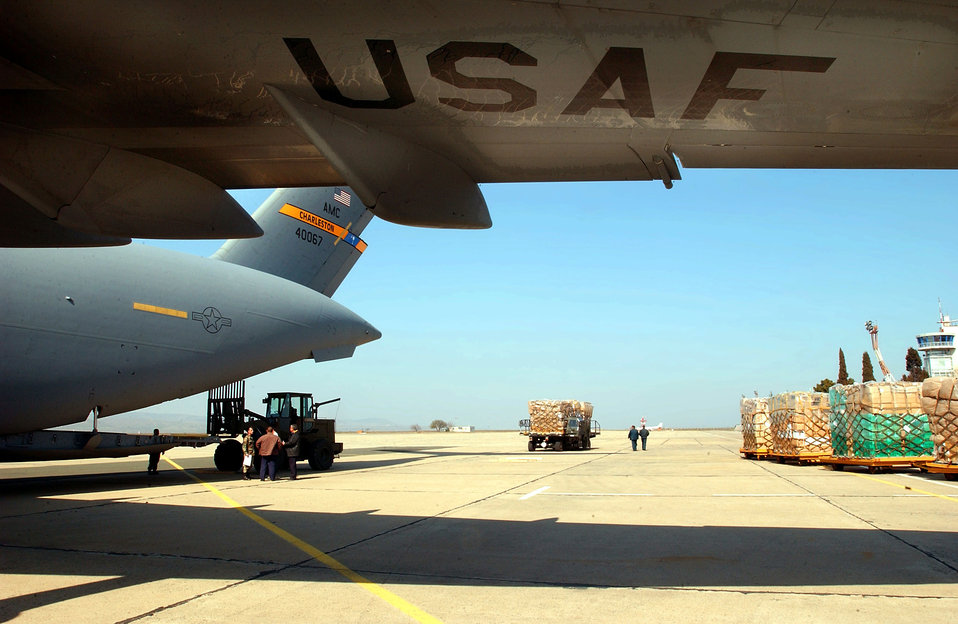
Loading C-17

OPERATION IRAQI FREEDOM -- Airmen from the 409th Air Expeditionary Group, deployed to Camp Sarafovo, Bulgaria, palletize and load humanitarian cargo onto a C-17 Globemaster III. The C-17 landed a Burgas Airport on its way to deliver humanitarian aid to the people of Iraq. KC-10 Extenders from the 305th/514th Air Mobility Wing, McGuire AFB, N.J., are deployed to Burgas Airport and nearby Camp Sarafovo, Bulgaria, to support tanker operations. Camp Sarafovo is home to the 409th Air Expeditionary Group, which is currently conducting air refueling operations with KC-10 Extender aircraft that have deployed to Burgas Airport while support operations are conducted from nearby Camp Sarafovo. Members from various Air Force units world-wide are currently deployed with the 409th AEG in support of Operation Iraqi Freedom.